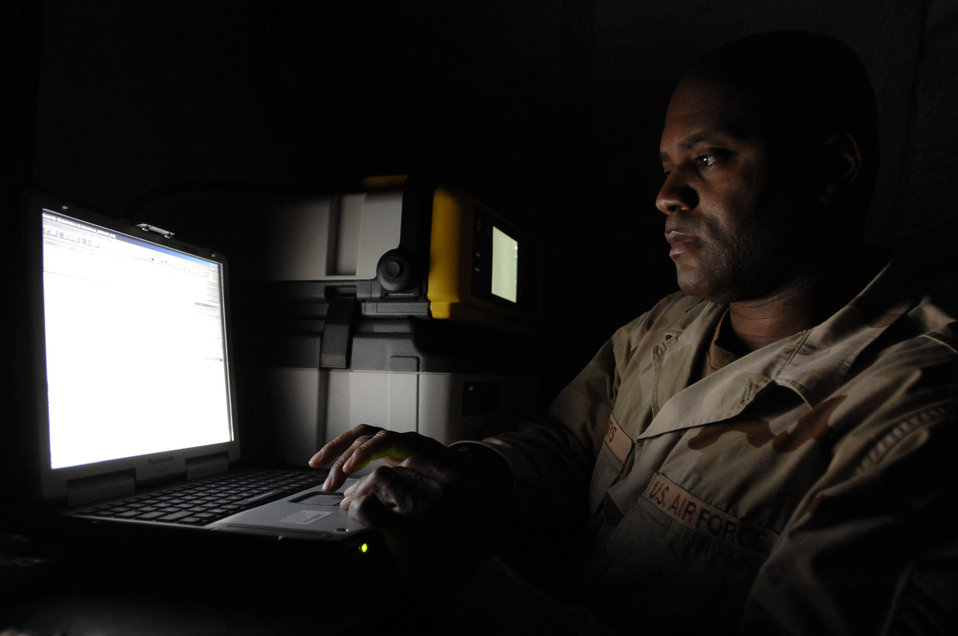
Show me where it hurts

Master Sgt. Michael Keys uses a hazardous air pollutant site monitor to check air, soil, and water samples for contaminations Dec. 11 at Ali Base, Iraq. Sergeant Keys is assigned to the 407th Expeditionary Medical Squadron Bioenvironmental Engineer Flight and is responsible for occupational safety and health administration and environmental protection. Sergeant Keys is deployed from McConnell Air Force Base, Kan.